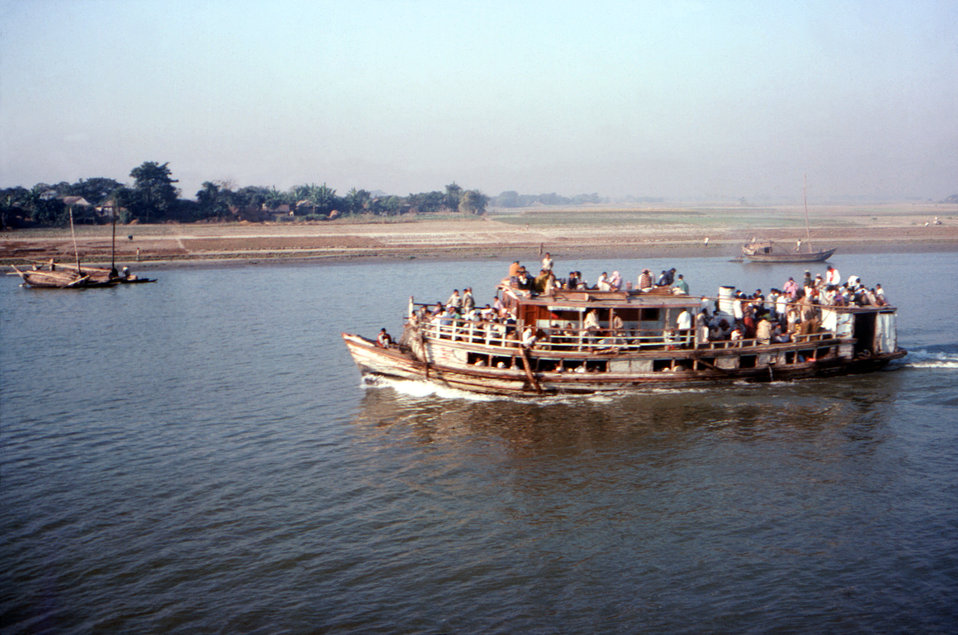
This December, 1975 photograph depicted an over crowed ferry as it powered itself along Southern Bangladesh's Meghna River.